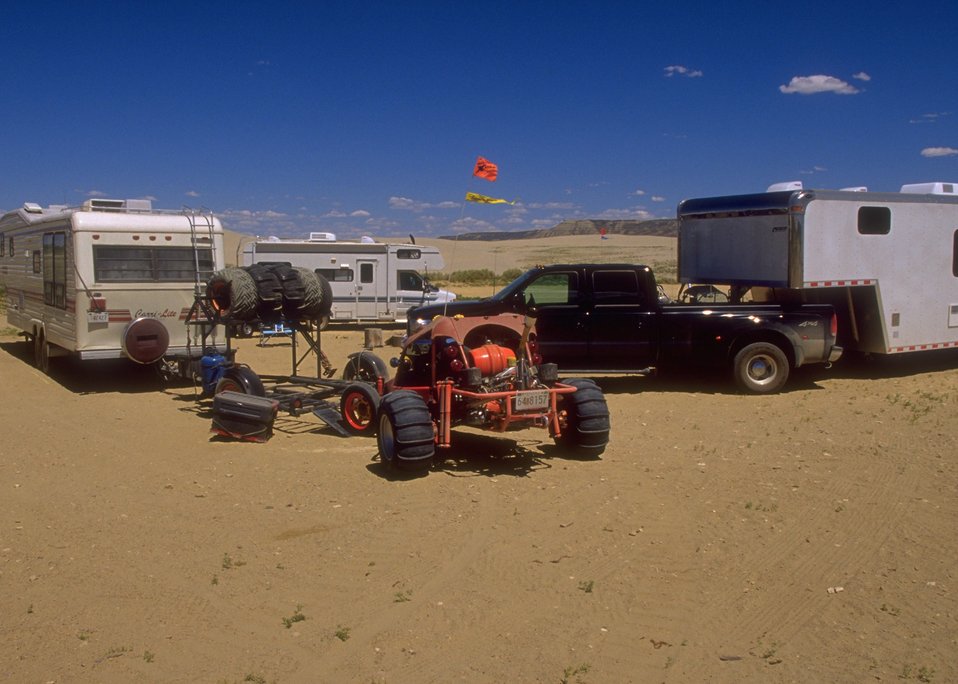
Camping at Sand Dunes OHV Area, Rock Springs Field Office.